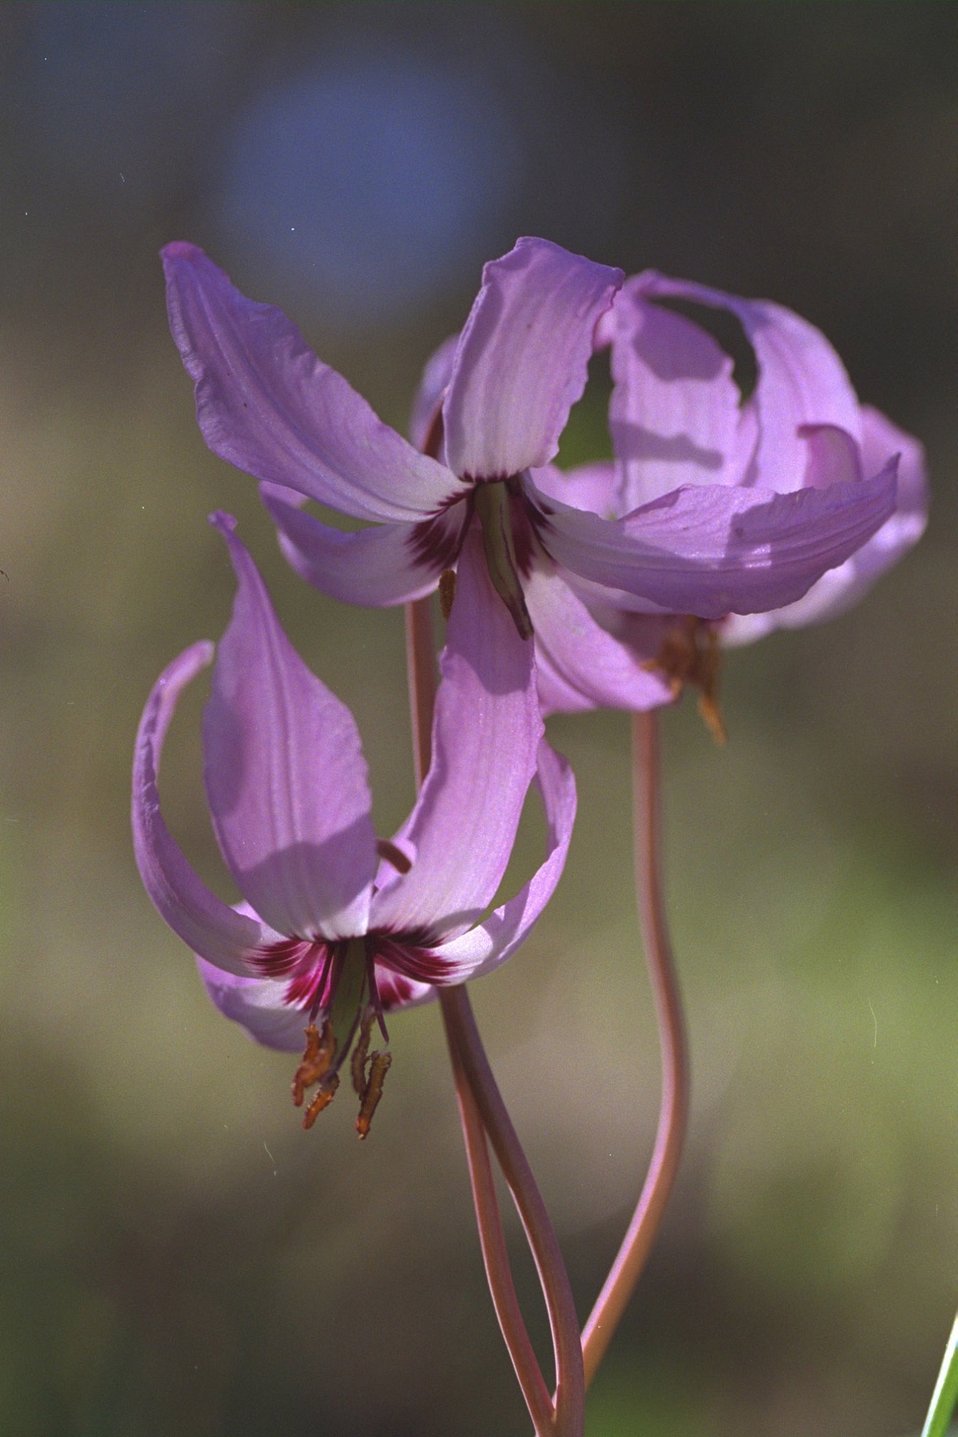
Henderson's Fawn Lily (Erythronium hendersonii) at Upper Table Rock.